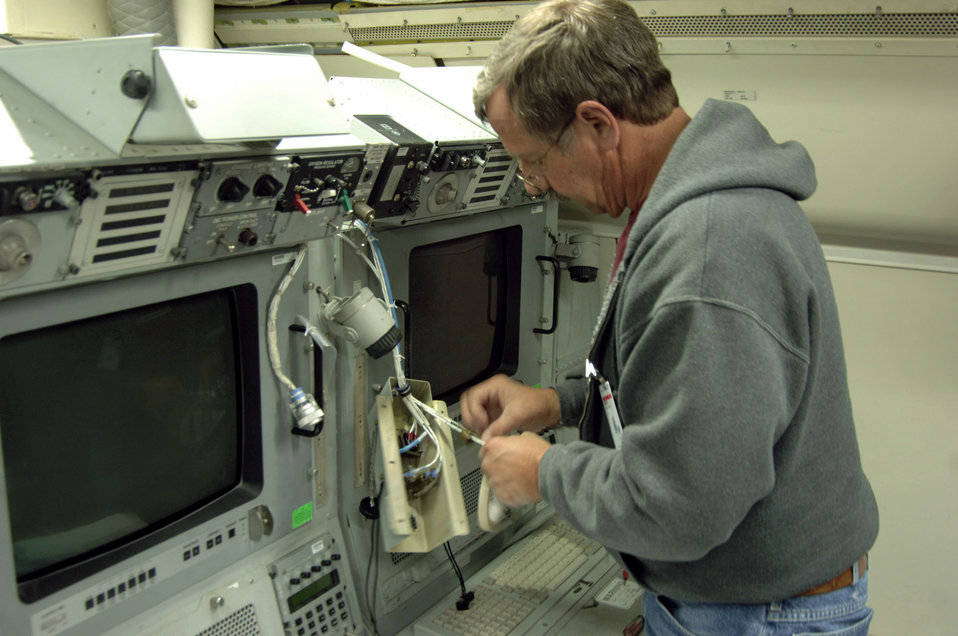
Joint STARS goes beyond line of sight

Bruce Wilbur of Northrop Grumman Corp. installs operator workstation interface equipment on an E-8C Joint STARS aircraft at Robins Air Force Base, Ga. Officials at the Air Force Electronic Systems Center at Hanscom AFB, Mass., are managing the comprehensive upgrade, which will make beyond-line-of-sight communication possible, allowing Joint STARS to stand off further from fixed or mobile ground stations and increasing their range and coverage capabilities.